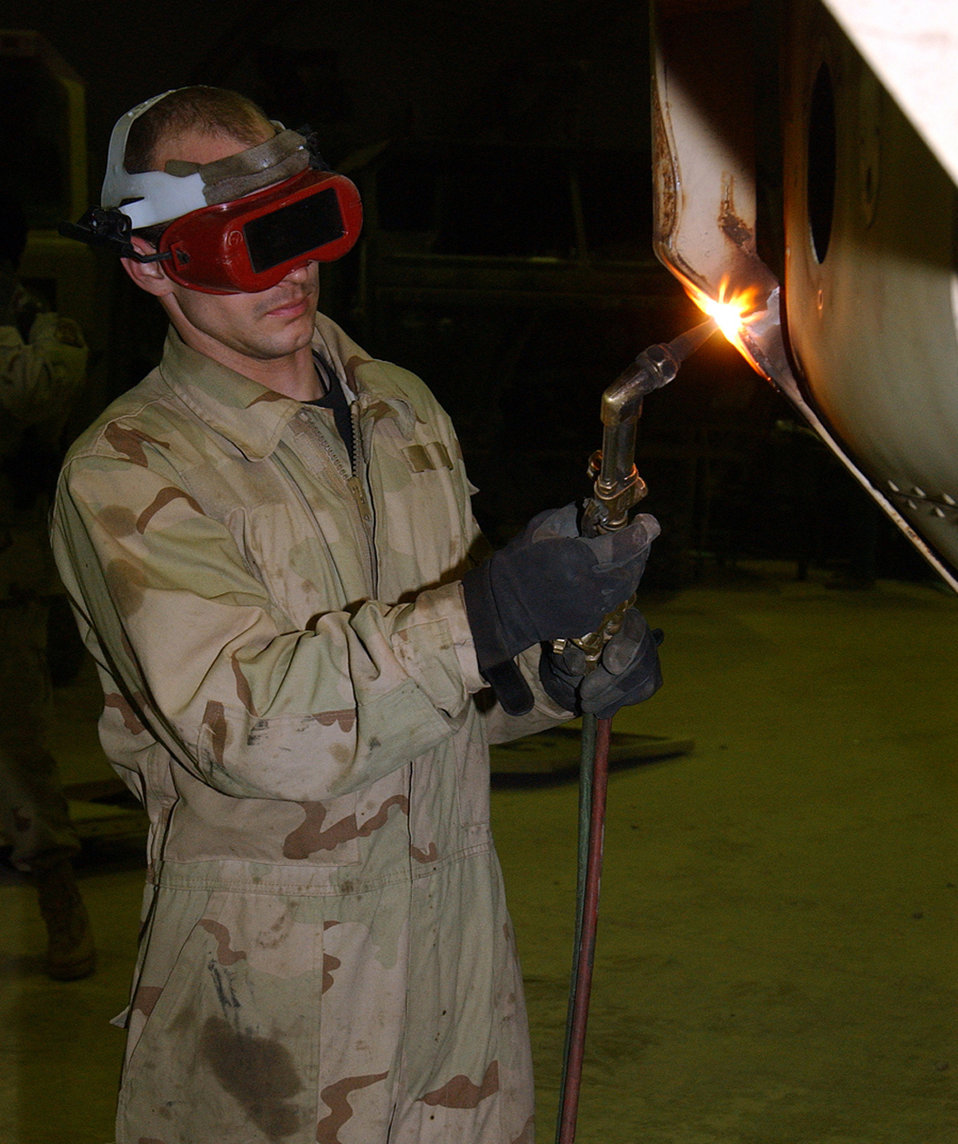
Airmen add armor to Army vehicles

BALAD AIR BASE, Iraq -- Senior Airman Mark McIlroy heats up an Army vehicle's metal to straighten the frame. Before a vehicle receives armor, the vehicle is fully inspected and minor repairs are made. Airman McIlroy is a 732nd Expeditionary Logistics Readiness Squadron vehicle maintainer deployed from Aviano Air Base, Italy.